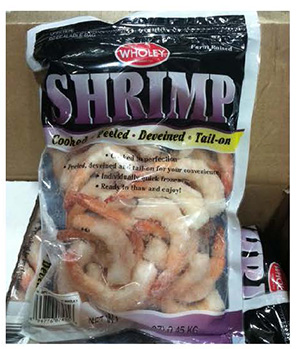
RECALLED – Shrimp (Wholey Peeled, Cooked, Tail-On 31/40)

July 27, 2013 – Product Recall – Lipari Foods Recalls Wholey Peeled Cooked Tail-on 31/40 Count Shrimp Because of Possible Health Risk.